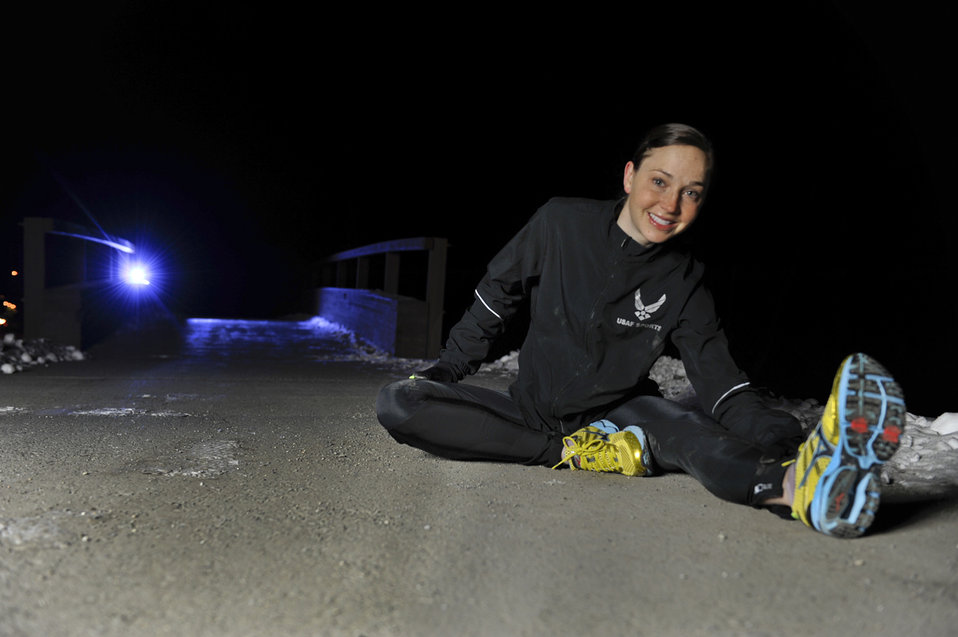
Ice Runner

1st Lt. Caitlin Oviatt stretches after a morning run on Joint Base Elmendort-Richardson, Alaska, on Nov. 6, 2012. Oviatt is a marathon runner who, as part of a three-woman team, competed against every branch of service to win the All Service Championship for the Air Force female division at the 2012 Marine Corps Marathon, held in Washington, D.C. Oct. 28.